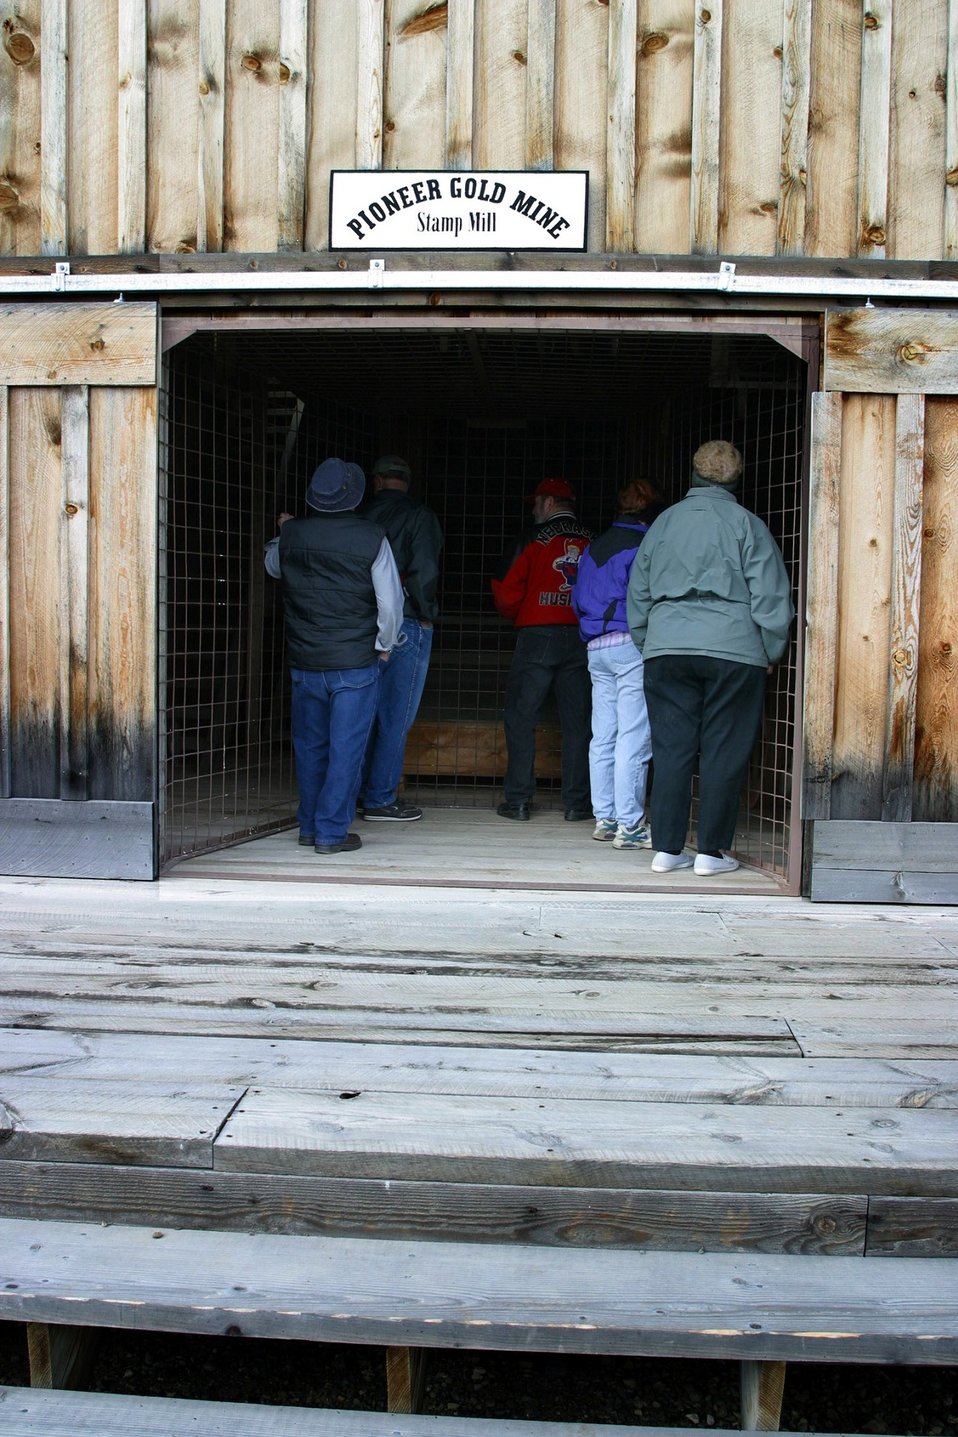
A replica of the Rabbit Mine 1926 stamp mill near Greenhorn in the Blue Mountains of eastern Oregon. It is used to interpret the importance of mining in western history, and the relationship of gold mining to the westward migration story.